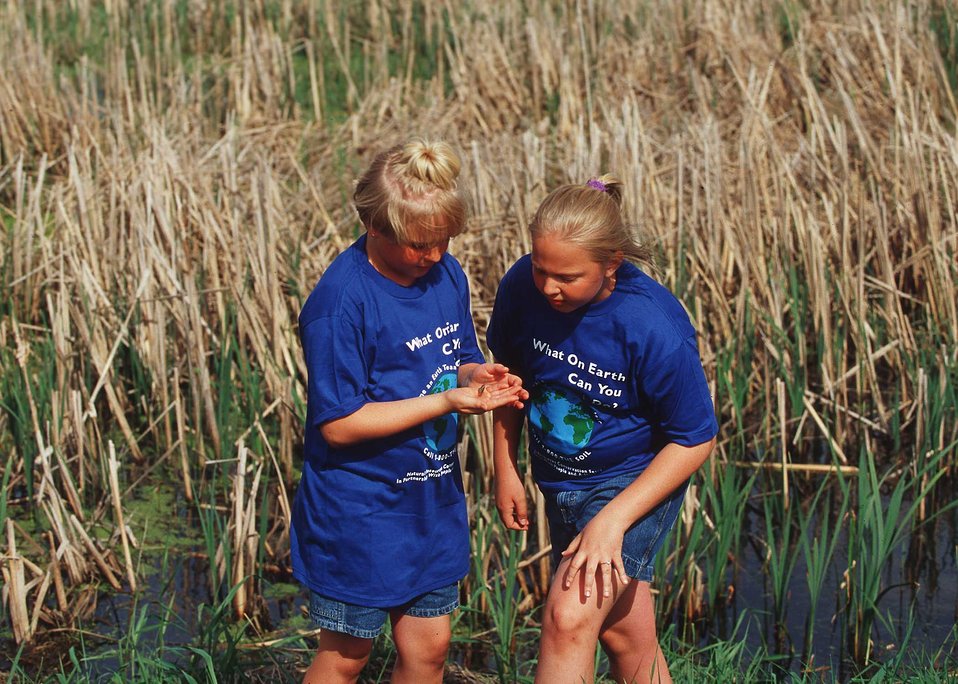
Earth Team youth examining a butterfly beside a wetland in eastern South Dakota.